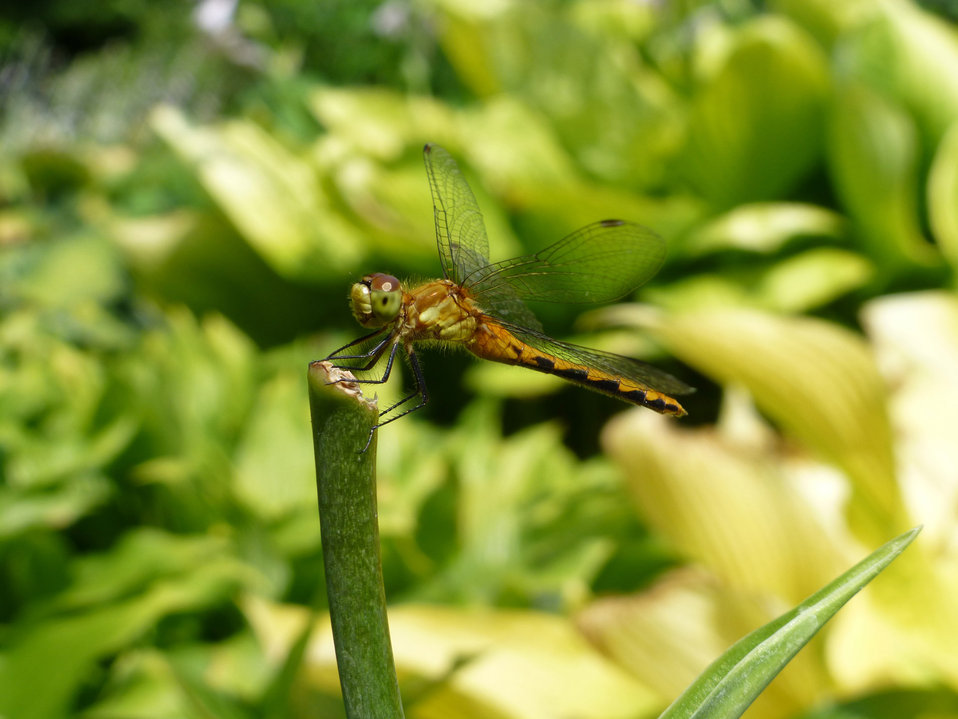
Green dragon fly

Closeup of a green dragon fly.